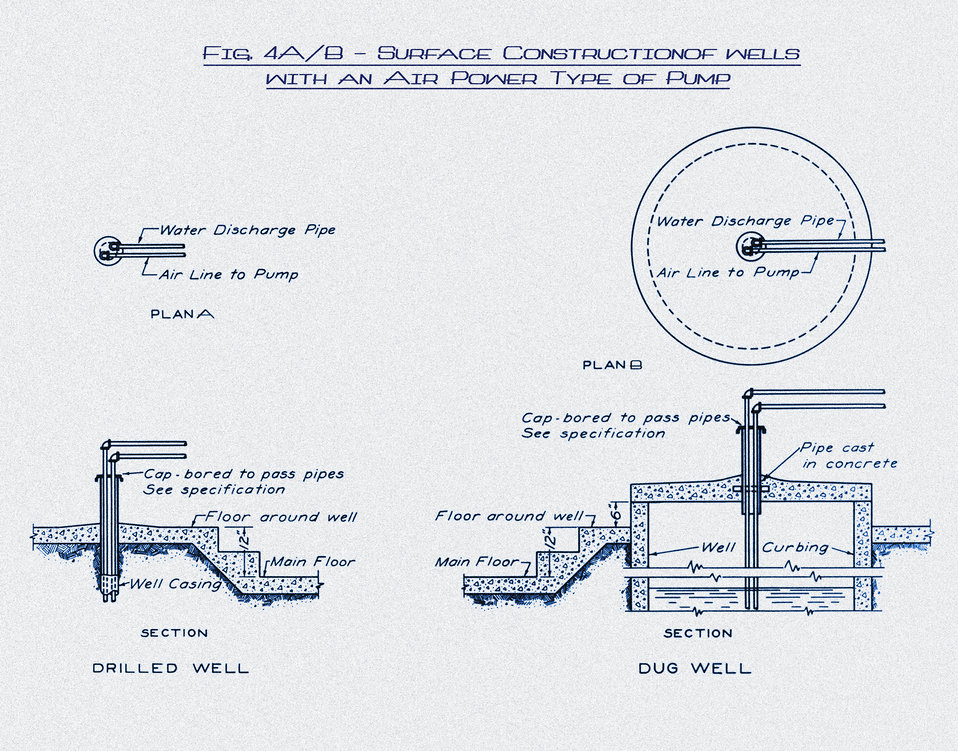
This historic diagram, which had been digitally enhanced and colorized, depicted the surface construction of 'dug'-, 'drilled'-, and 'driven'-type wells that had been equipped with suction pumps. The cross-sectional renderings identified the components, placing them into the approximate relationship to one another, in their optimal positions, in order to achieve maximum performance efficiency.